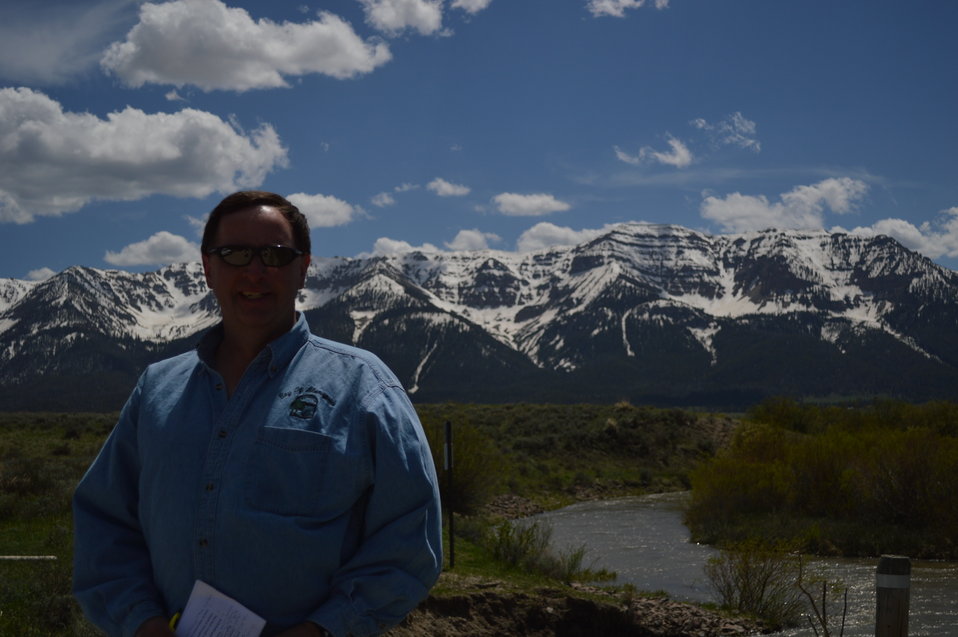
Regional Leadership Visit to Montana 2014